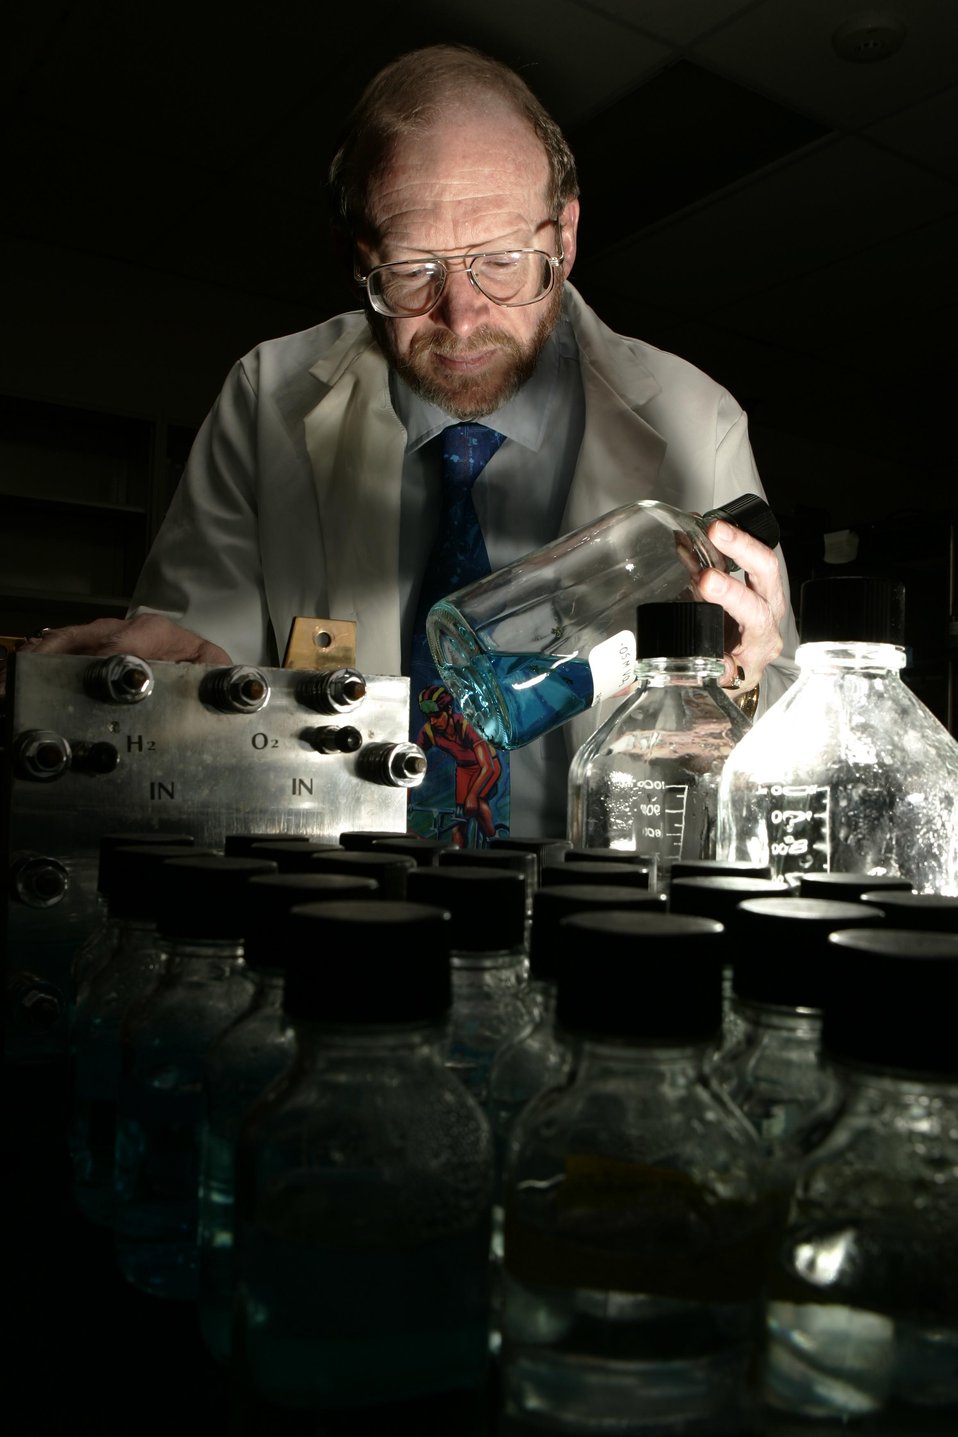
NREL conducts R&D in hydrogen production and delivery, hydrogen storage, fuel cells, technology validation, safety, codes and standards and analysis. This crosscutting effort involves laboratory research in photovoltaics, bioenergy, transportation, wind buildings and basic sciences. The work is conducted in the Hydrogen, Fuel Cells and Infrastruction Technology Program.